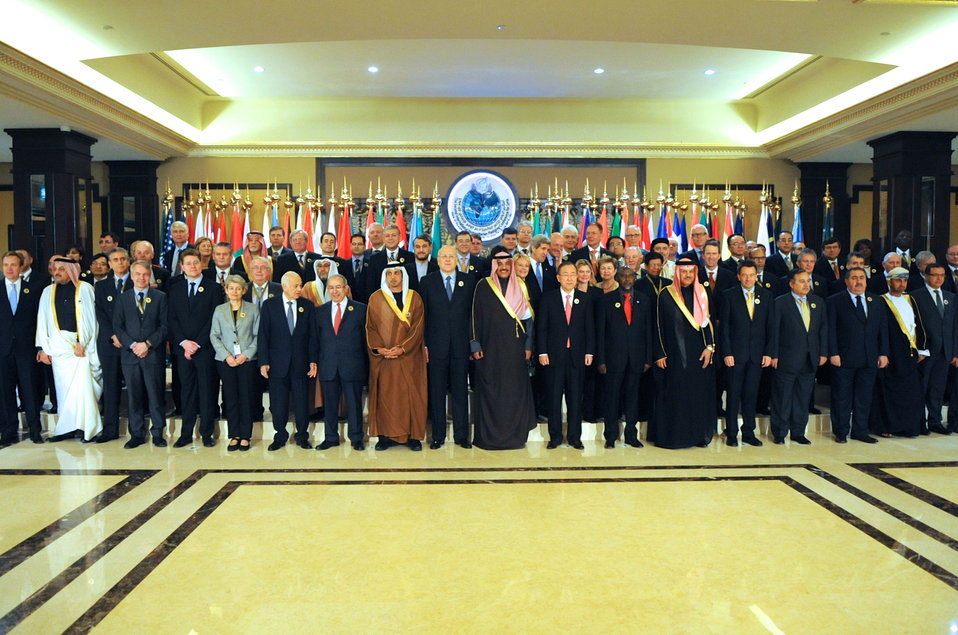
Secretary Kerry Joins Attendees For Syrian Donors' Conference Group Photo

U.S. Secretary of State John Kerry, center right, second row, joins with attendees the Syrian Donors' Conference for a group photo in Kuwait City, Kuwait, on January 15, 2014.